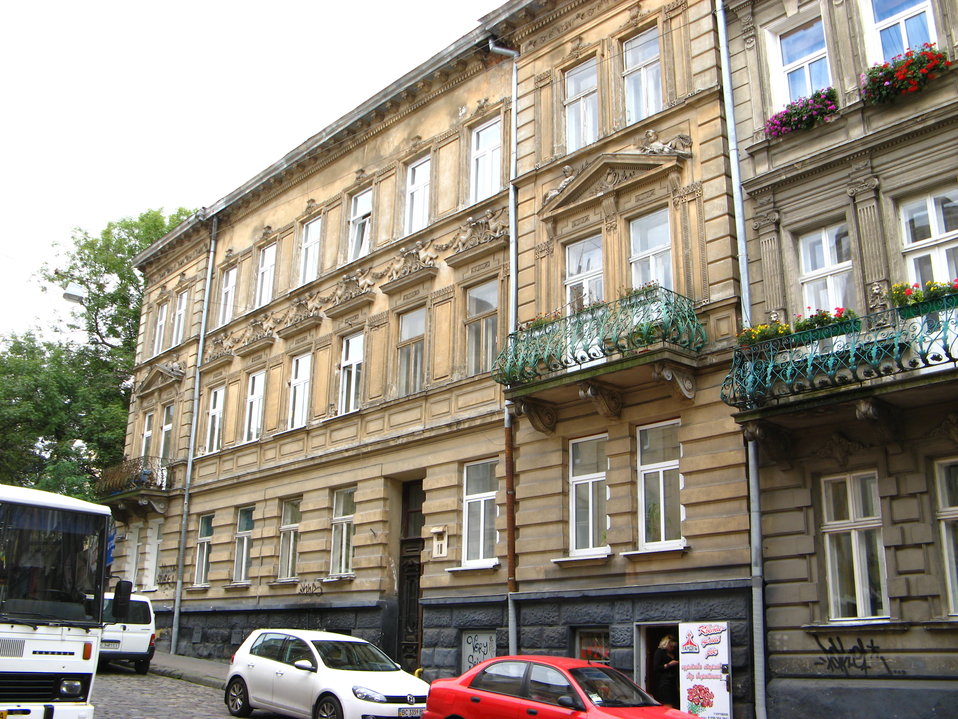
Українська: 10, вул. Лисенка (Львів)